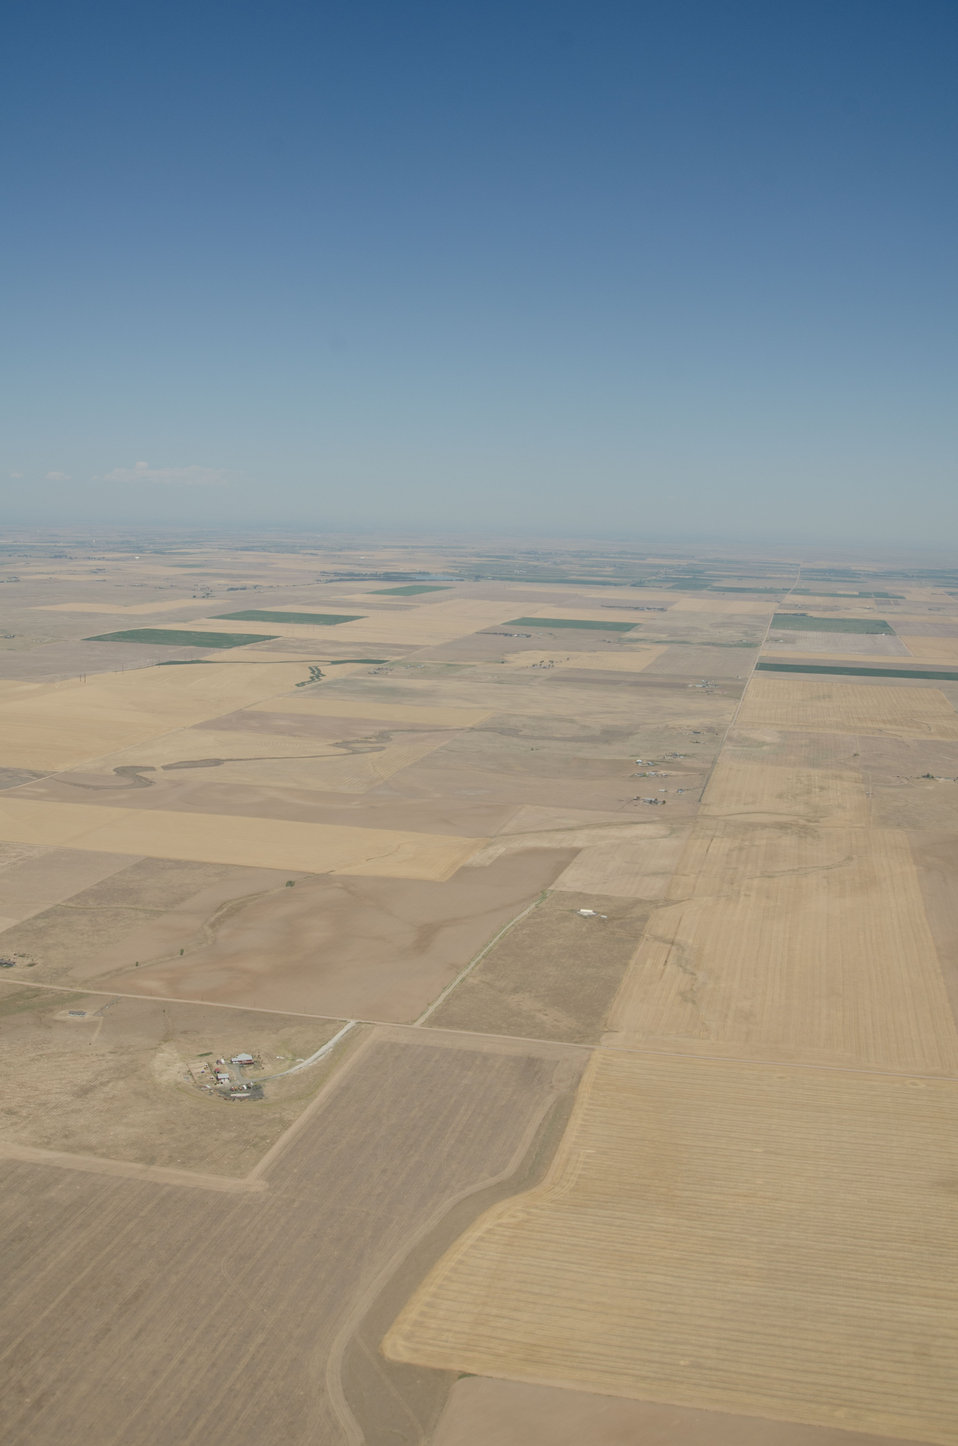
Aerial views of drought affected Colorado farm lands, 74 miles east of Denver, Colorado on Saturday, July 21, 2012.